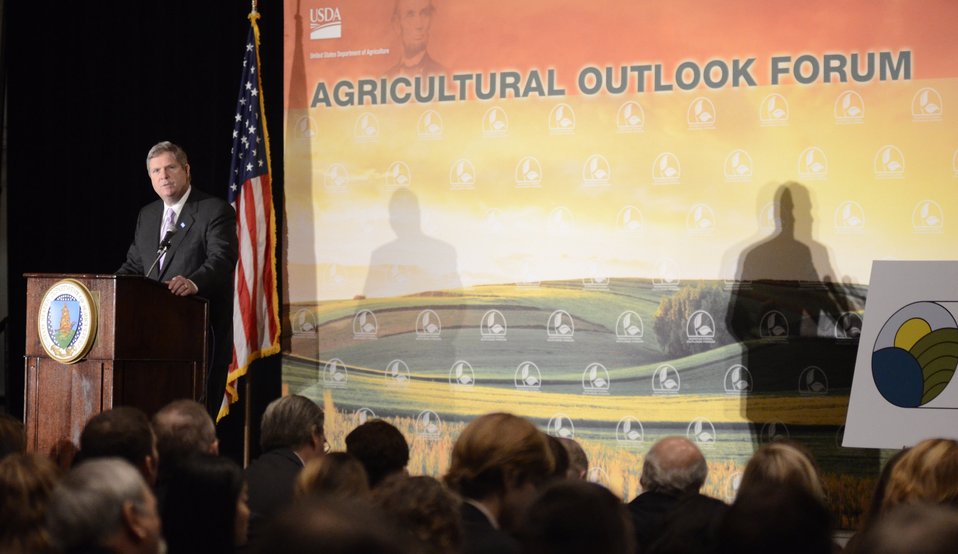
Agriculture Secretary Tom Vilsack makes remarks at the 2012 Agricultural Outlook Forum, “Moving Agriculture Forward” in Arlington, VA., on Thursday, February 23, 2012.